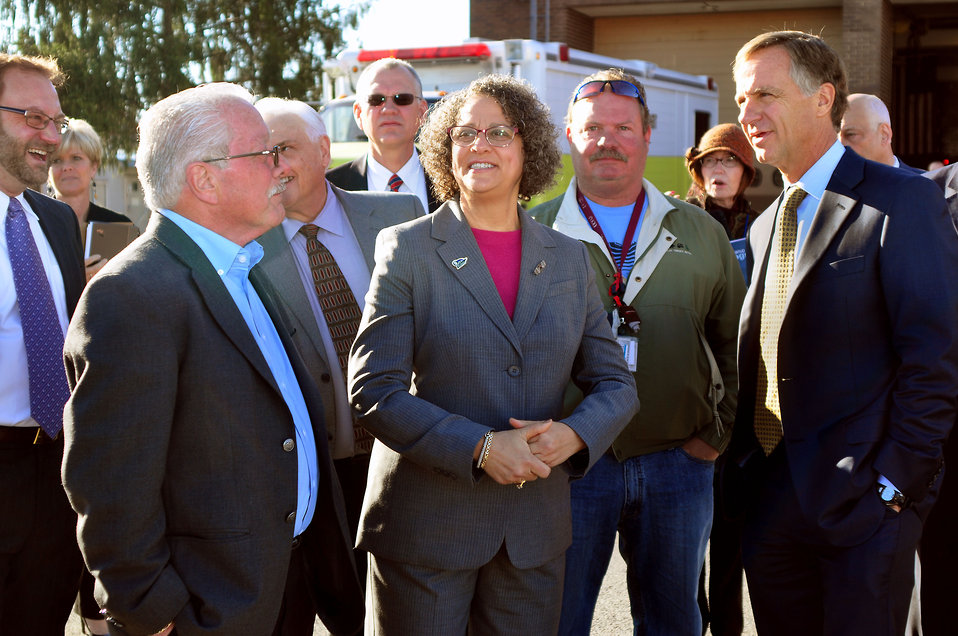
Gov. Bill Haslam Visit to ETTP 2014 Oak Ridge

14-037 DOE photo Lynn Freeny 3-21-2014 Oak Ridge Tennessee